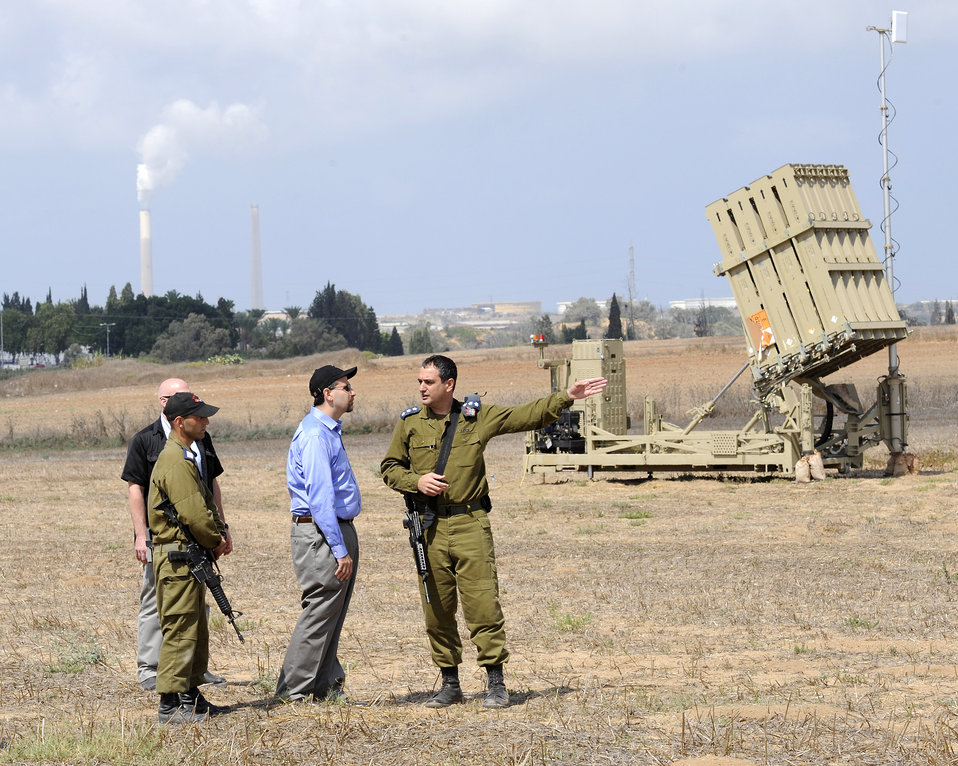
Ambassador Shapiro Tours the Iron Dome Battery in the South of Israel

U.S. Ambassador to Israel Daniel B. Shapiro, hosted by Captain Elad Tzinman, Israeli Air Force Battery Commander, and Colonel Tzvika Chaimovitch, Israeli Air Force 167 Wing Commander, travels to the south of Israel for a tour of the Iron Dome Battery in Ashkelon, Israel, on August 9, 2011.